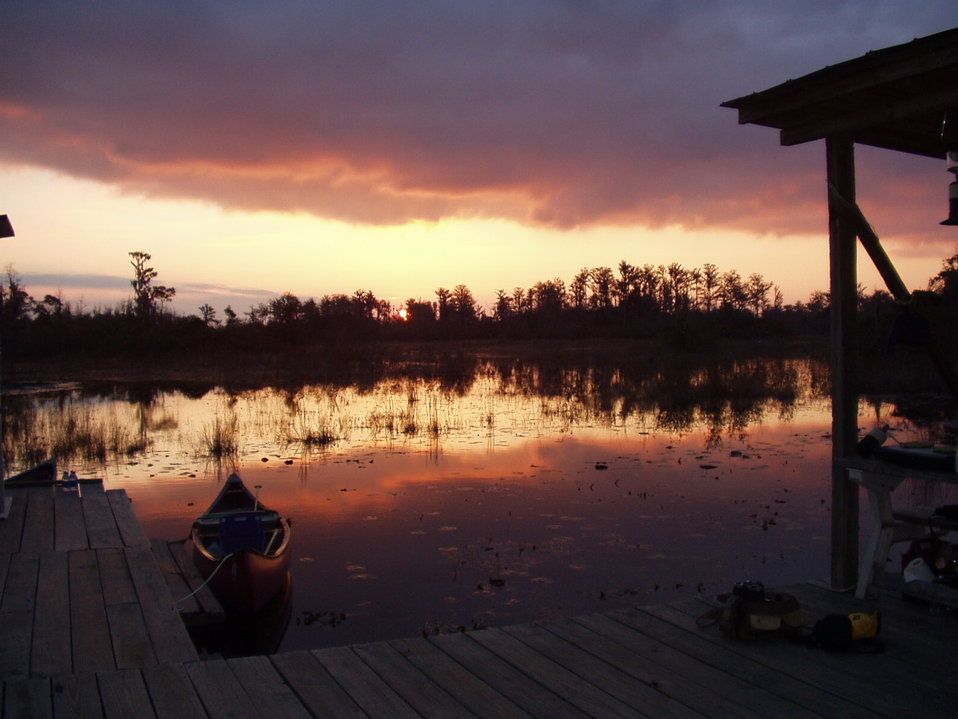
Sunset at Round Top

Looking at sunset from Round Top overnight canoe shelter in Chase Prairie, Okefenokee National Wildlife Refuge, GA. Joy CampbellOkefenokee Adventures